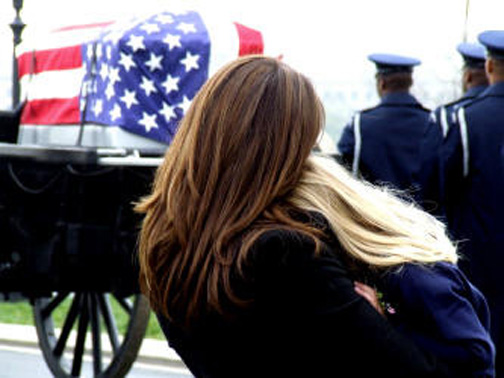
Fallen tanker pilot to be honored in building dedication

Family members Maj. Robert F. Woods watch as the caisson carrying him is prepared to move to a grave site April 9, 2008, at Arlington National Cemetery, Virginia. Officials from the 916th Air Refueling Wing will dedicate an auditorium in Major Woods' honor June 26, 2011.